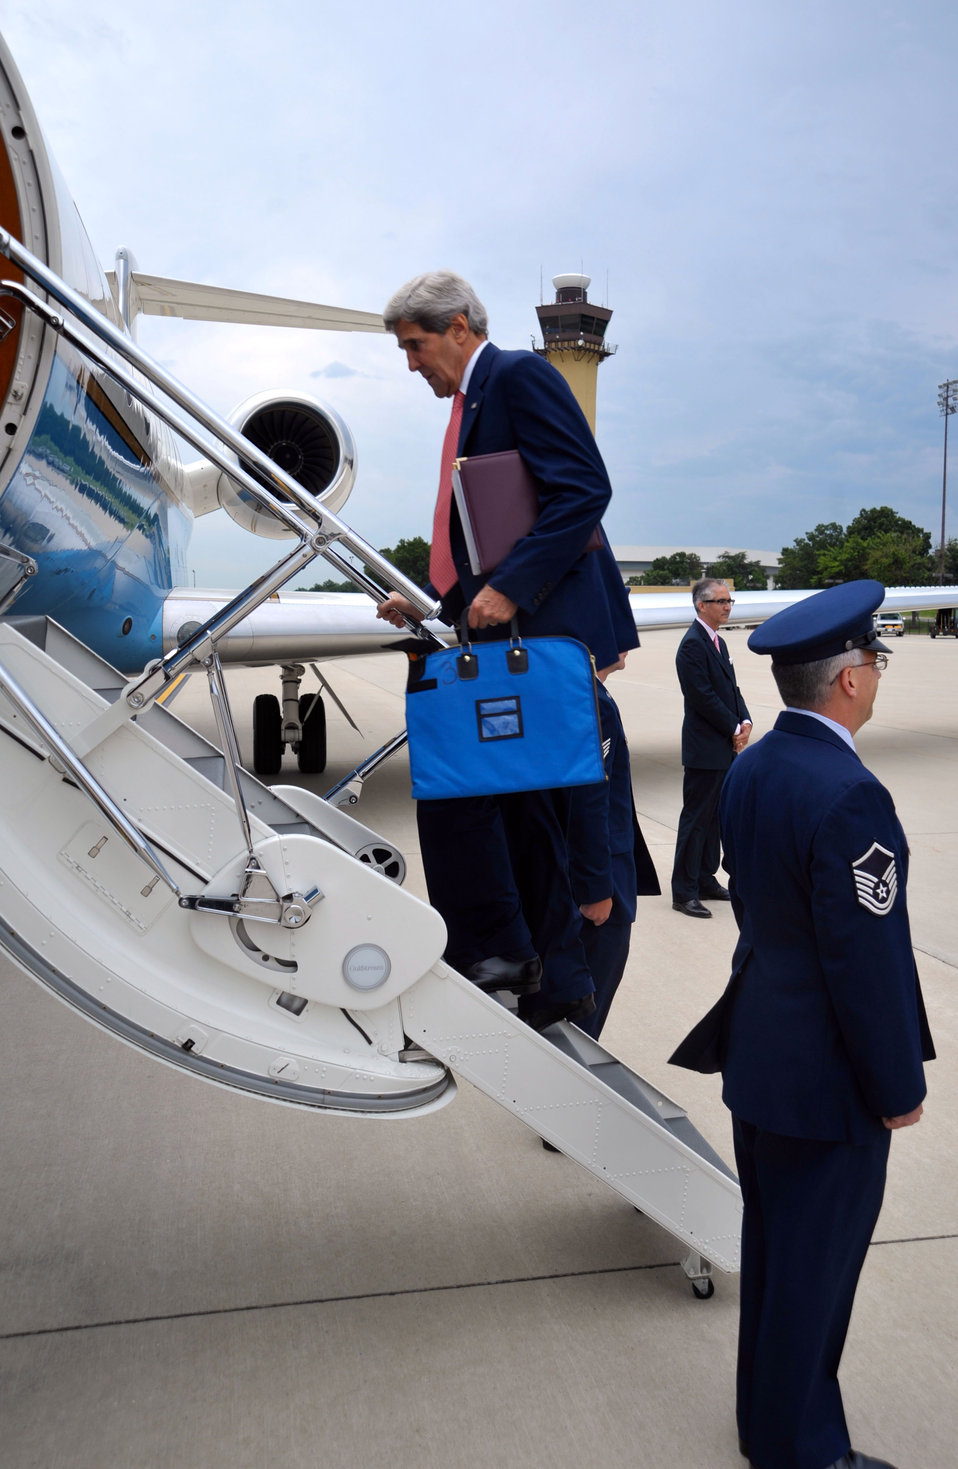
Secretary Kerry Boards the Plane

U.S. Secretary of State John Kerry boards a U.S. Air Force jet at Andrews Air Force Base in Maryland for a flight to New York City to attend meeting at the United Nations on July 25, 2013.